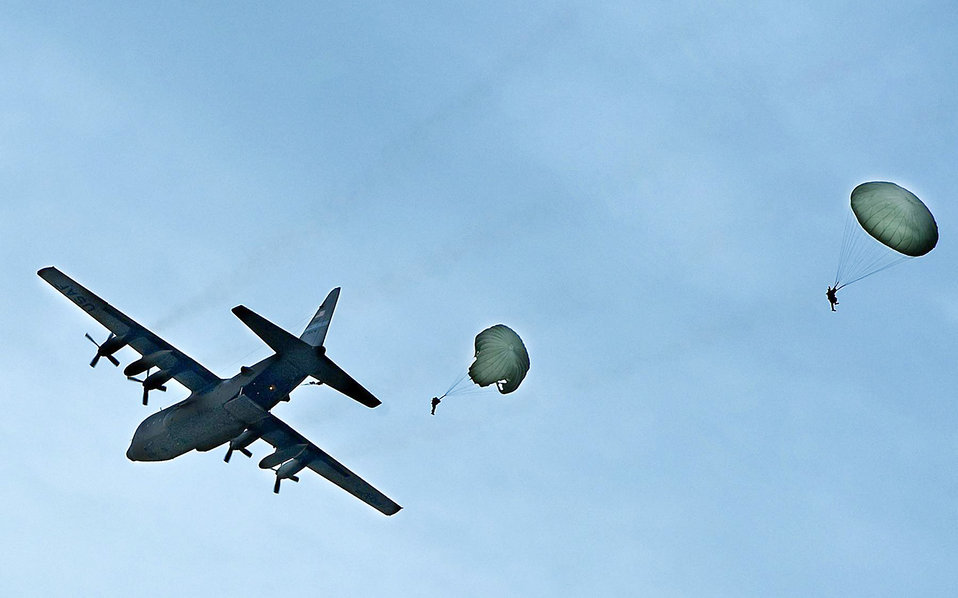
Hydra Exercise 2009

A C-130 Hercules drops 823rd Red Horse personnel during the Hydra Exercise 2009. Hydra is a training exercise developed to provide a West Coast venue to train the 615 Contingency Response Wing's unique mission capabilities such as, command and control, aerial port, maintenance and air mobility liaison duties in a joint environment.